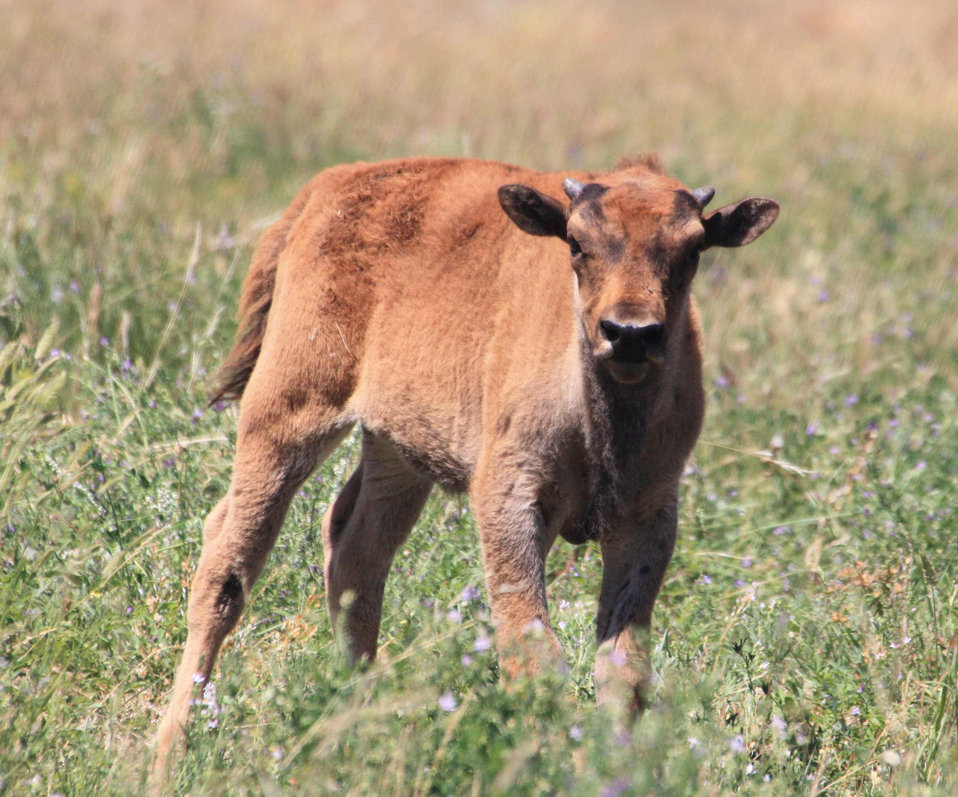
First Growth

A bison calf shows the first sign of horn growth.

Credit: USFWS / Ann Hough, National Elk Refuge volunteer